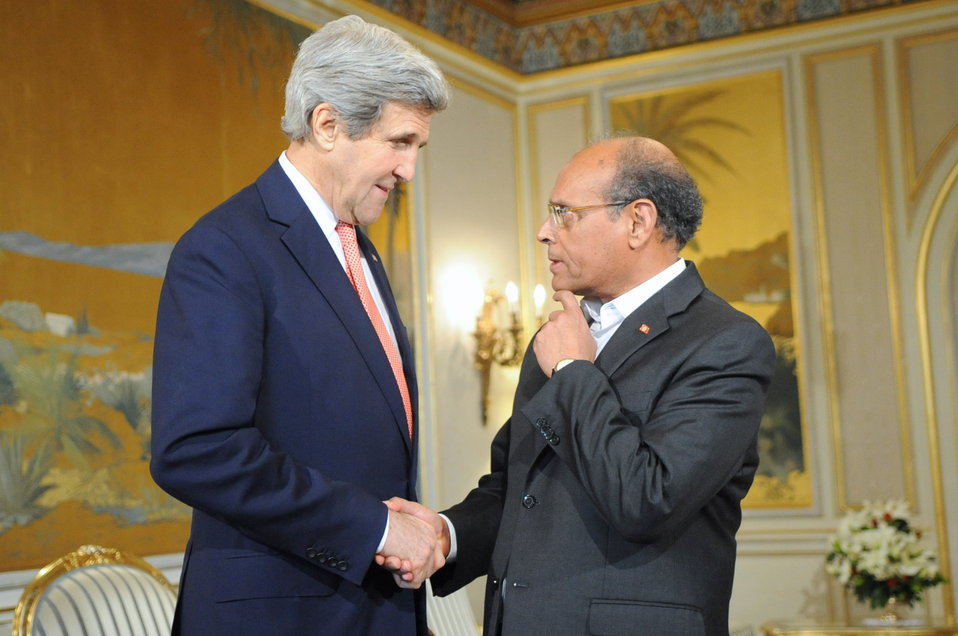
Tunisian President Marzouki Greets Secretary Kerry in Tunis

Tunisian President Moncef Marzouki greets U.S. Secretary of State John Kerry upon his arrival the Carthage President's Residence in Carthage, Tunisia, on February 18, 2014.